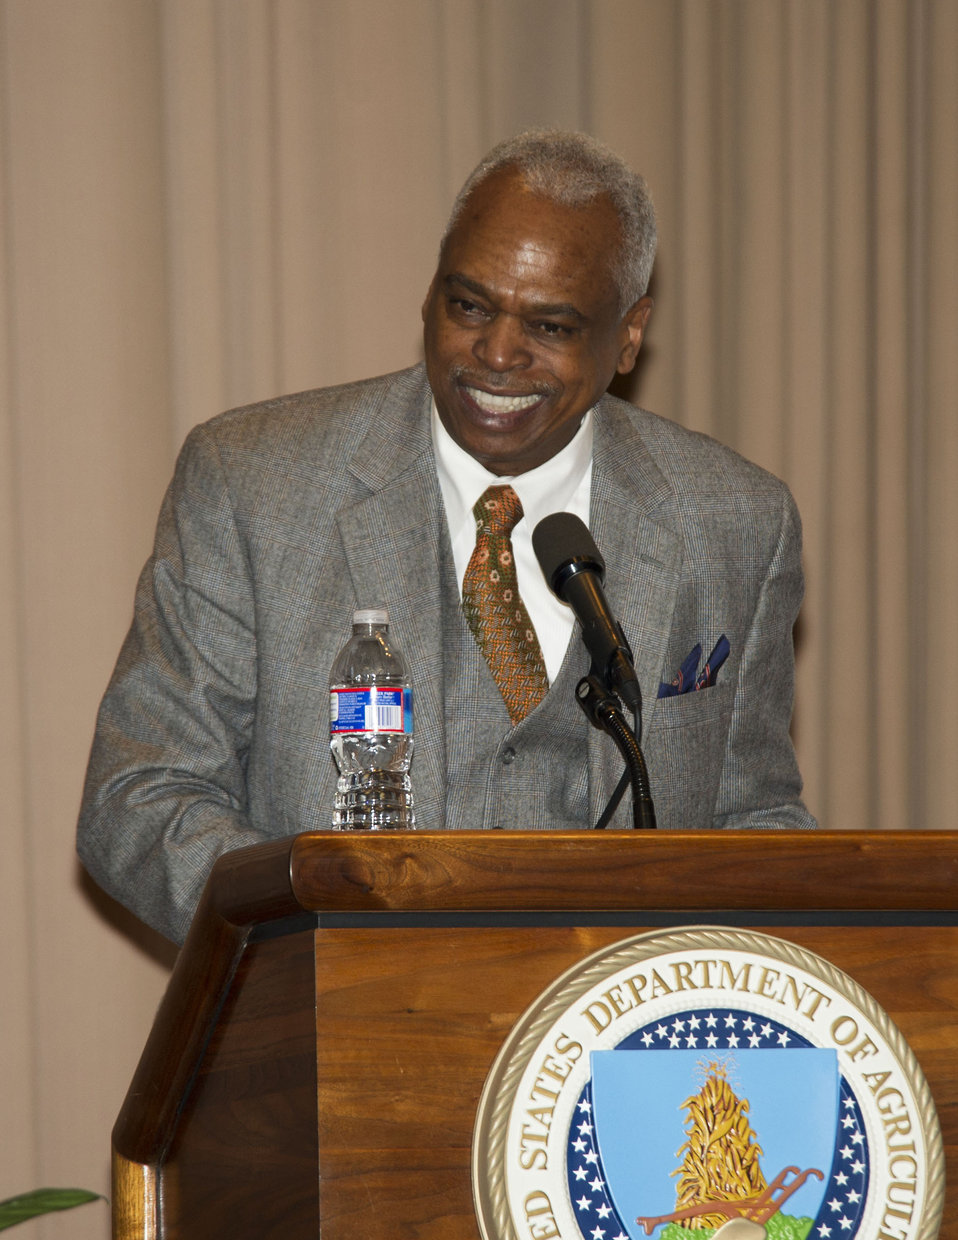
Wade Henderson, President and CEO of the Leadership Conference on Civil And Human Rights speaking at the U.S. Department of Agricuture Black History Month Observance on Feb. 21, 2013, in the Jefferson Auditioirum at the USDA in Washington, DC.